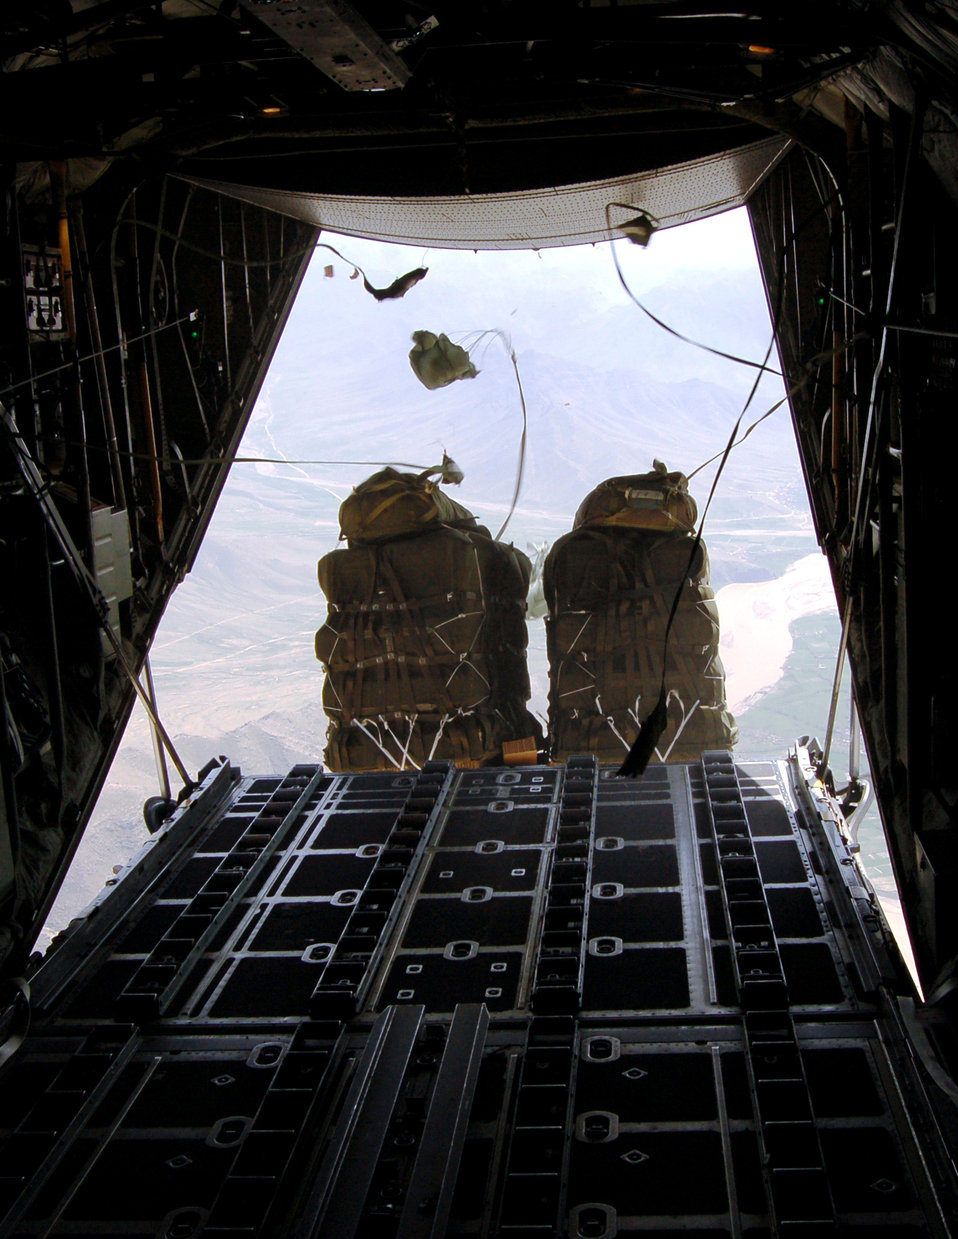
C-130 airdrops provide critical supplies to U.S. forces

Improved Container Delivery System bundles are dropped from a C-130 Hercules over Afghanistan March 27 to replenish supplies for U.S. ground forces supporting Operation Enduring Freedom.